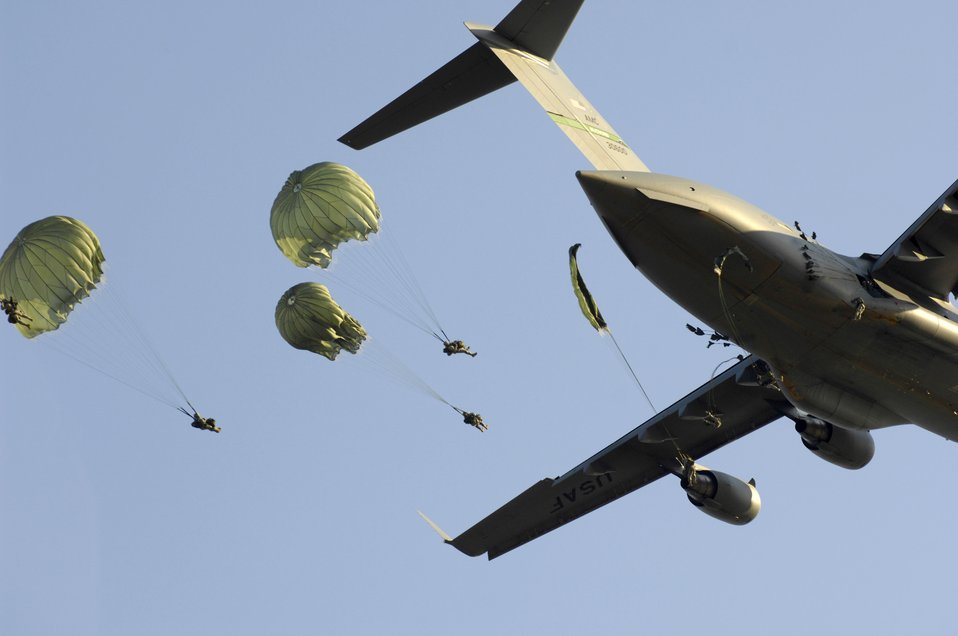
Hercules, Globemaster IIIs support joint training

Paratroopers from the 82nd Airborne Division jump from a C-17 Globemaster III during Joint Forcible Entry Exercise June 18 at Fort Bragg, N.C. The exercise is a joint airdrop exercise designed to enhance service cohesiveness between Army and Air Force members, allowing both services an opportunity to properly execute large-scale heavy equipment and troop movement.